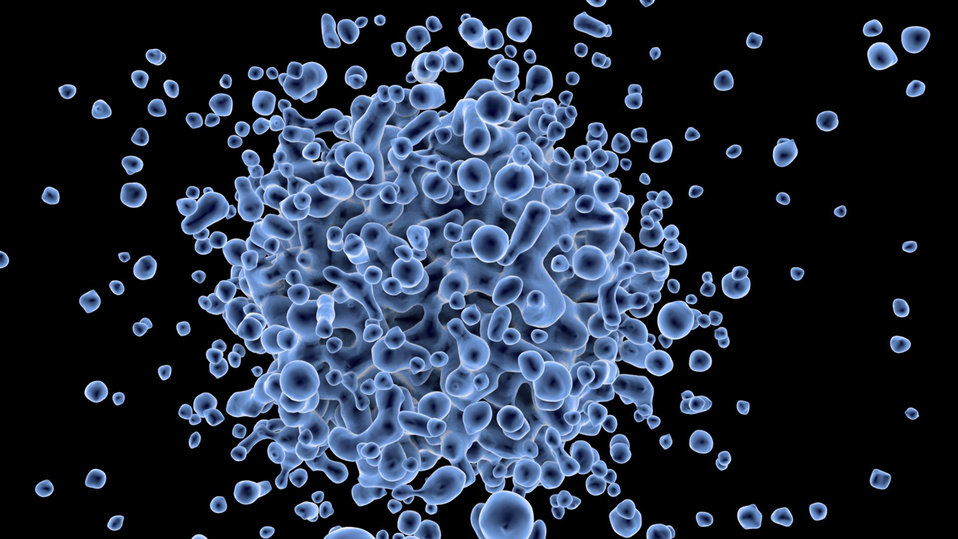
Virus

Spread of the virus.